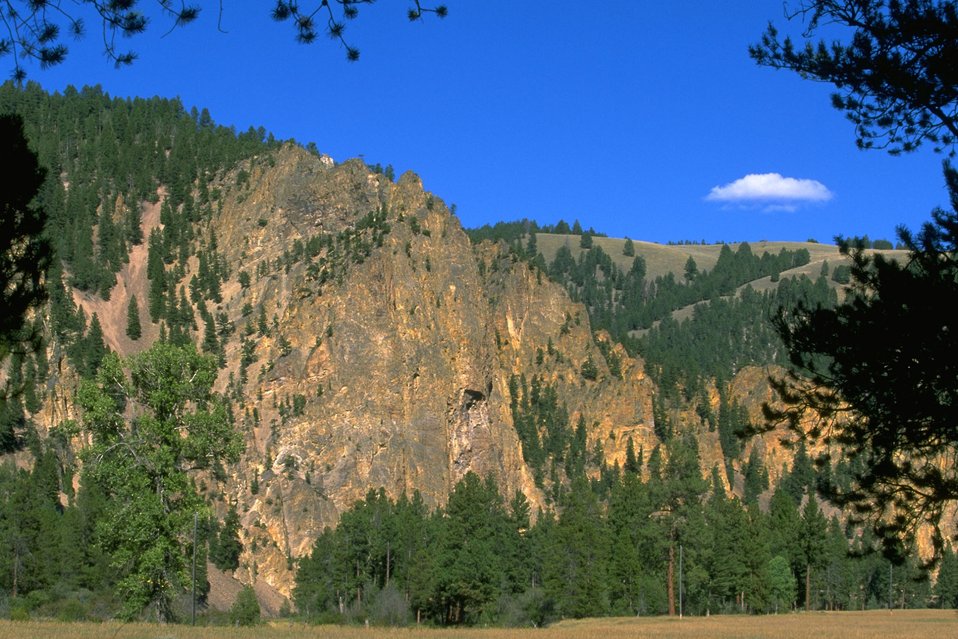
Squaw Rock ACEC (area of critical environmental concern)